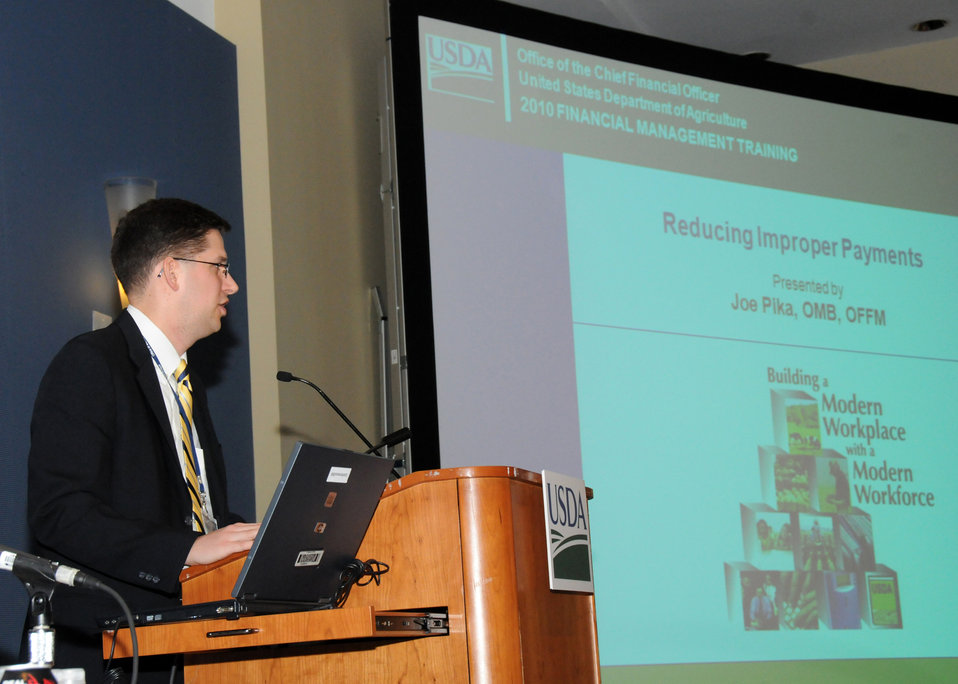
The Office of Management and Budget Joe Pika discussed improper payments. This training discussed the implementation of Executive Order 13520 of Nov. 20, 2009 reducing payment errors and eliminating waste, fraud and abuse in federal programs. His presentation took place at the Financial Management Training Conference held in Washington, D. C., on May 26, 2010. USDA photo 10di1371-145.